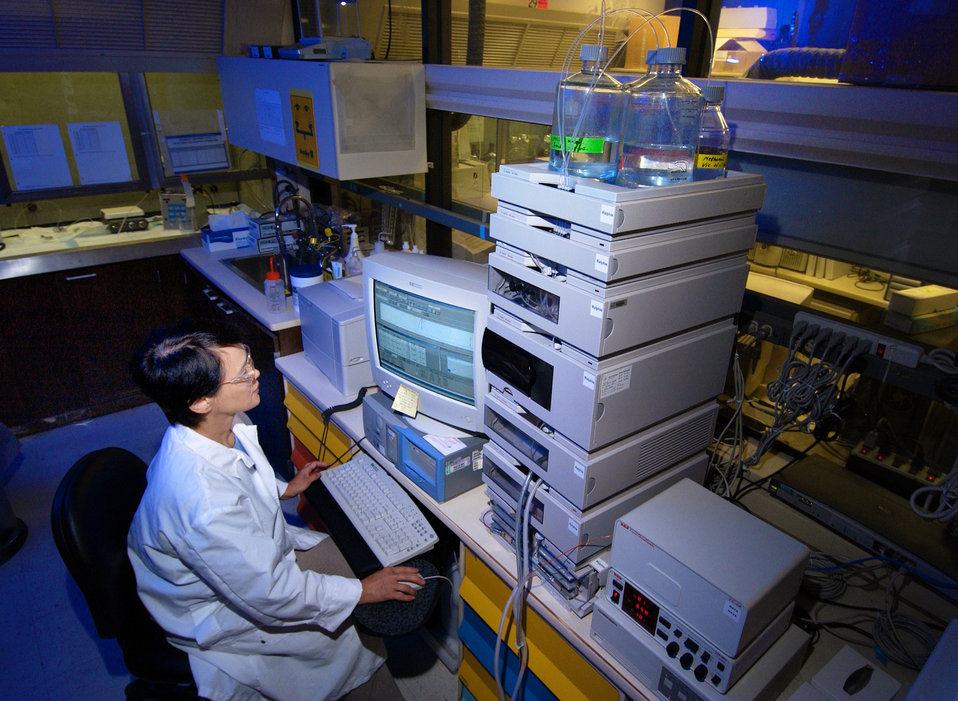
This 2004 photograph showed CDC laboratorian Mary Xu, reviewing High Performance Liquid Chromatography (HPLC) data acquired through the analysis of vitamin C concentrations found in a serum sample at the Personal Care Products Laboratory (PCPL) located in a CDC lab on the organization's Chamblee, Georgia campus.